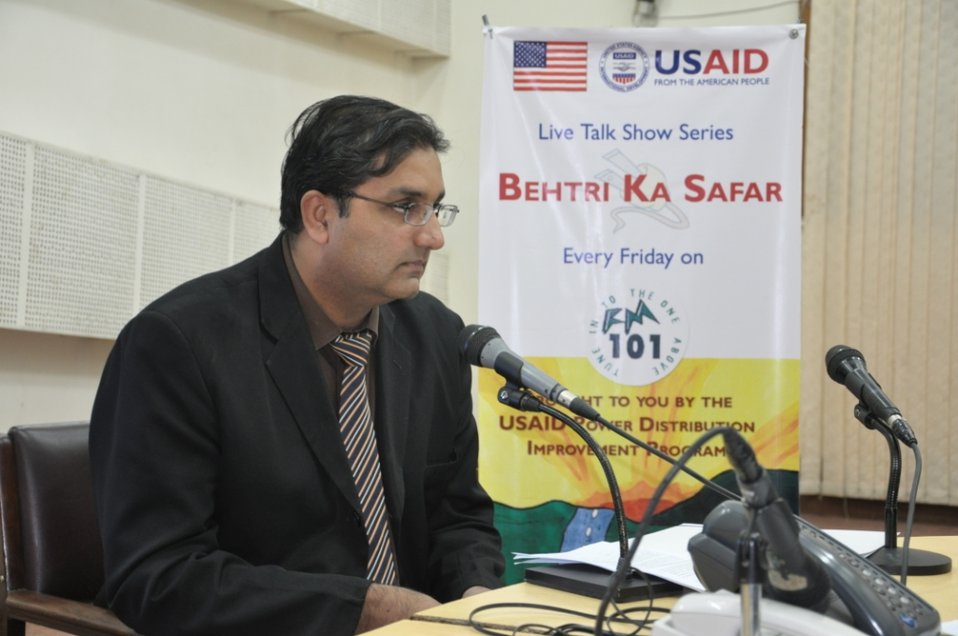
30 Nov 2011 - Radio Program on 'Utility Exchange Program' at Radio Pakistan

Mr. Ahmad Kamal of the USAID Power Distribution Program addressed the audience in the 10th episode of the interactive radio program 'Behtri Ka Safar' (Journey of Improvement).The episode focused on the 'Utility Exchange Program' (UEP) initiated by the USAID Power Distribution Program for the capacity building of DISCO staff. Two groups of 12 DISCO managers have completed their visits to modern electric utilities in Turkey and South Africa in order to enhance their understanding of modern utility best practices and practical information about change management programs that have the potential to be implemented in Pakistan. A third group of the UEP is preparing for their visit to the United States.